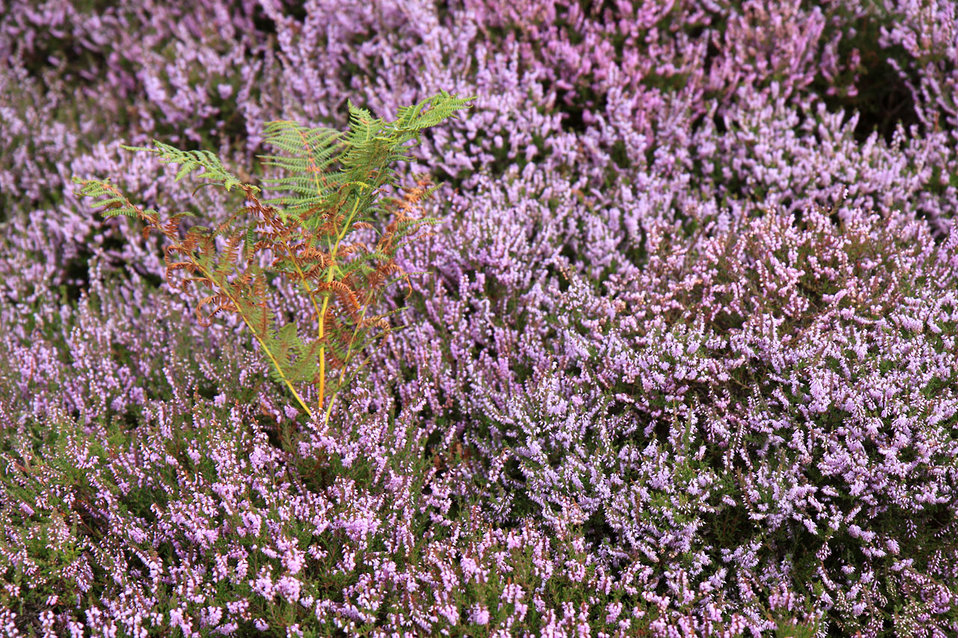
Heather background.